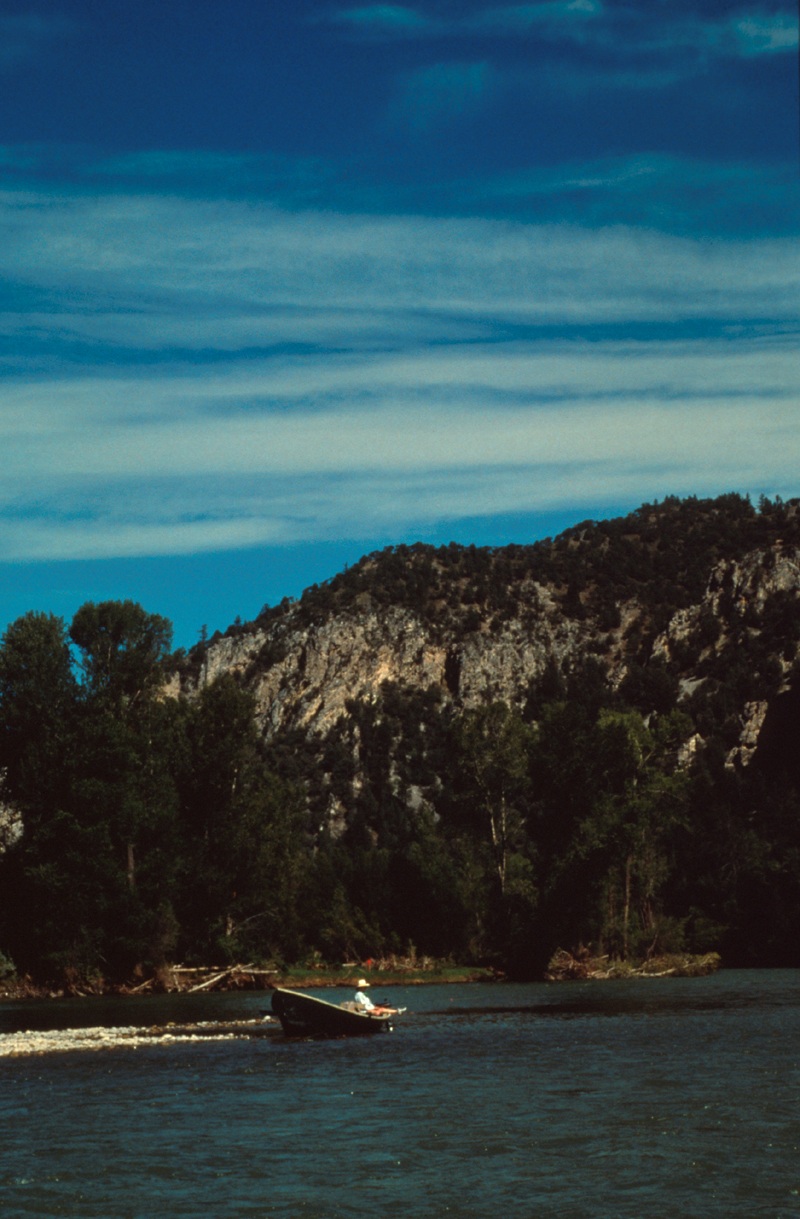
South Fork of the Snake River